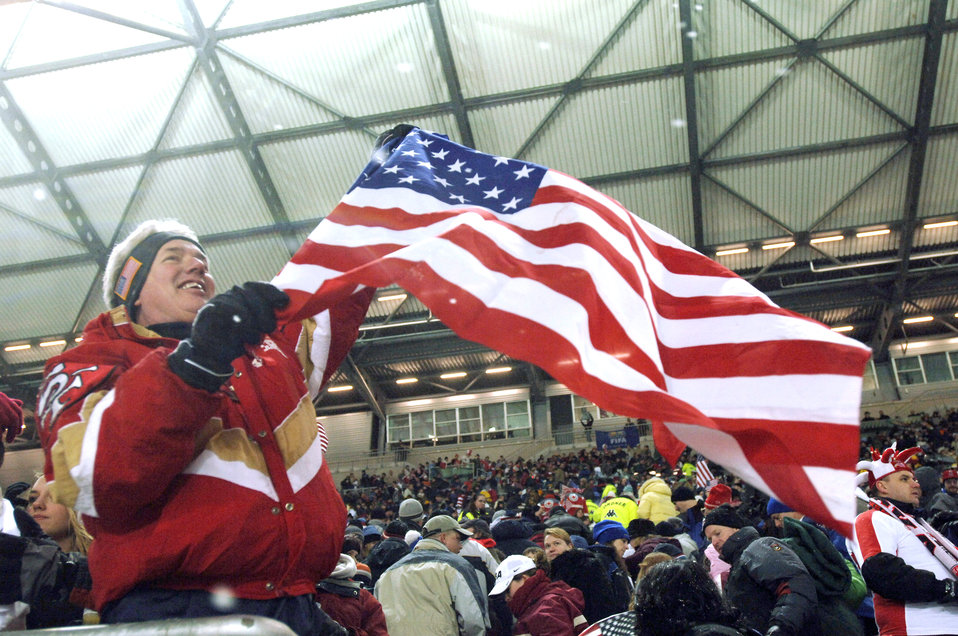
U.S. Men's National Soccer Team match

A U.S. flag is waved after the U.S. Men's National Soccer Team squeezes out a 1-0 victory over Poland. More than 13,000 soccer fans attended the exhibition match at Fritz-Walter-Stadium. The American team will play the German National Team Wednesday, March 22, 2006, at Dortmund, Germany.